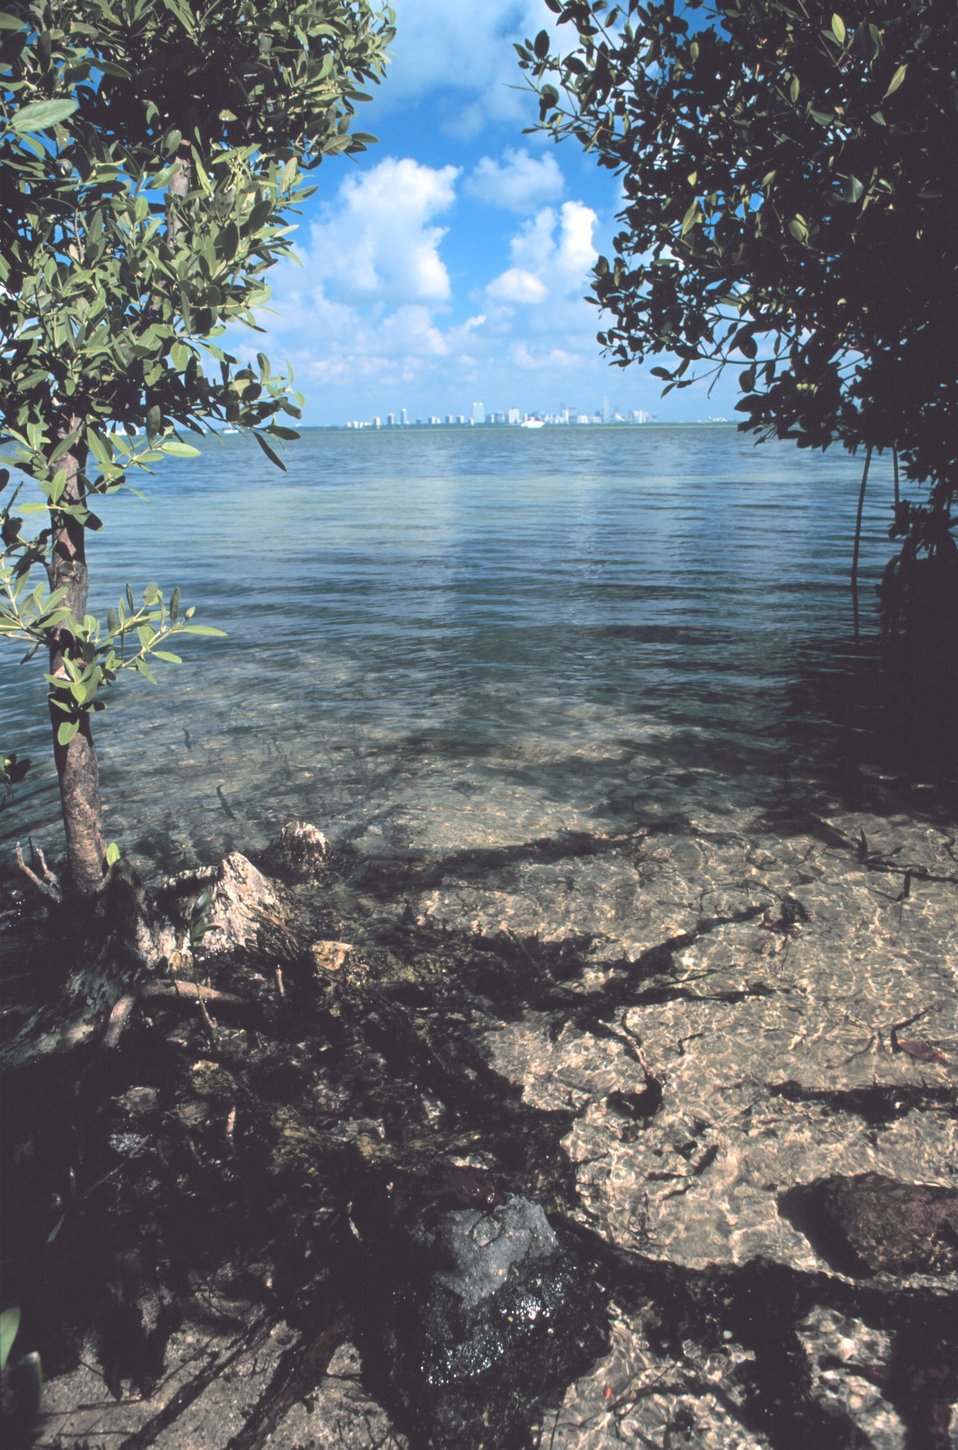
Looking north to the City of Miami across Biscayne Bay